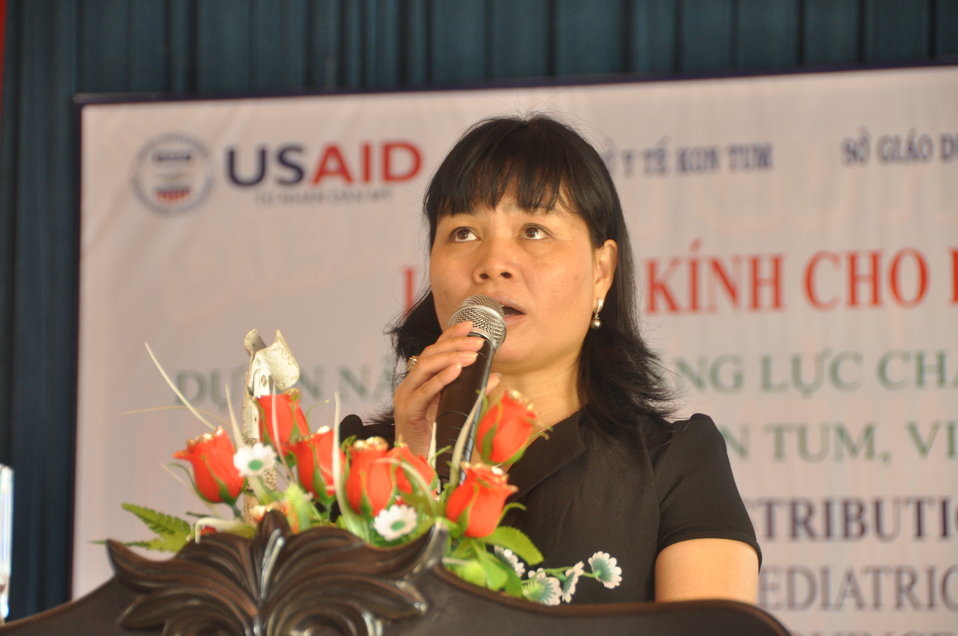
School children in Dak To, Kon Tum Province, receive eyeglasses under a program supported by USAID and partners HKI and World Leraning